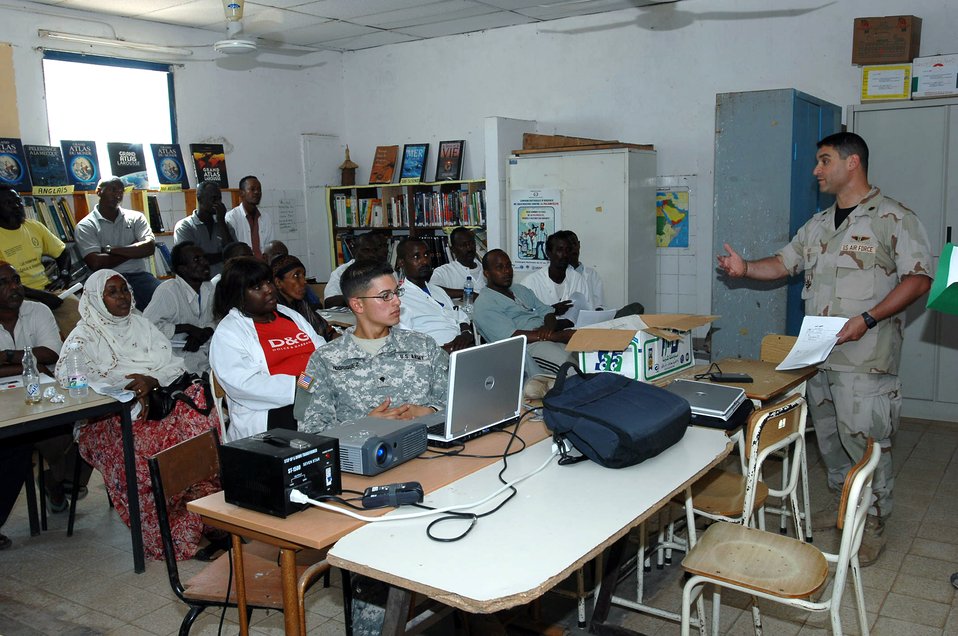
World powers bring soft touch to African neighbors

Lt. Col. Daniel A. Shoor, assigned to Combined Joint Task Force-Horn of Africa, leads a medical class Jan. 21 during training for nurses and medical technicians at a hospital in Tajoura, Djibouti.